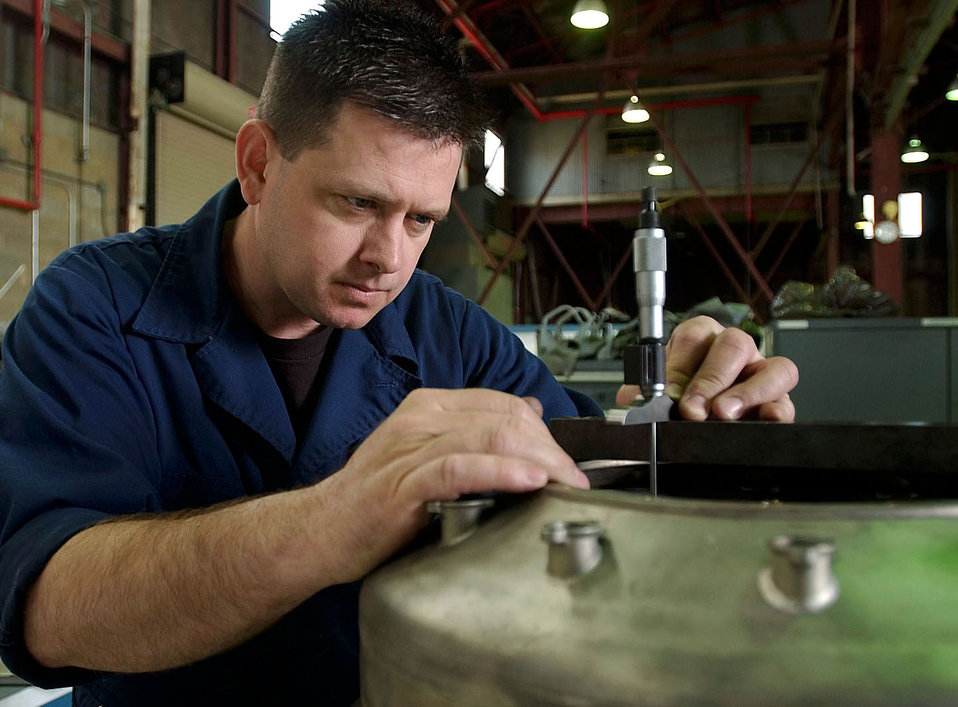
Dimensional check

DOVER AIR FORCE BASE, Del. -- Staff Sgt. Guy Dubose, 512th Component Maintenance Squadron, performs a dimensional check with a micrometer on an APU combustion chamber here.